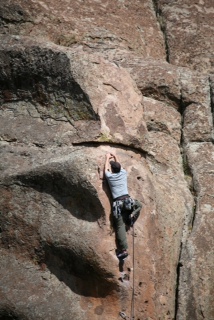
Rio Grande NF

Penitente Canyon Special Recreation Management Area on the Rio Grande National Forest in Colorado is an internationally recognized climbing area, offering more than 300 incredible sport-climbing routes. South-facing routes can be climbed year-round within the area.